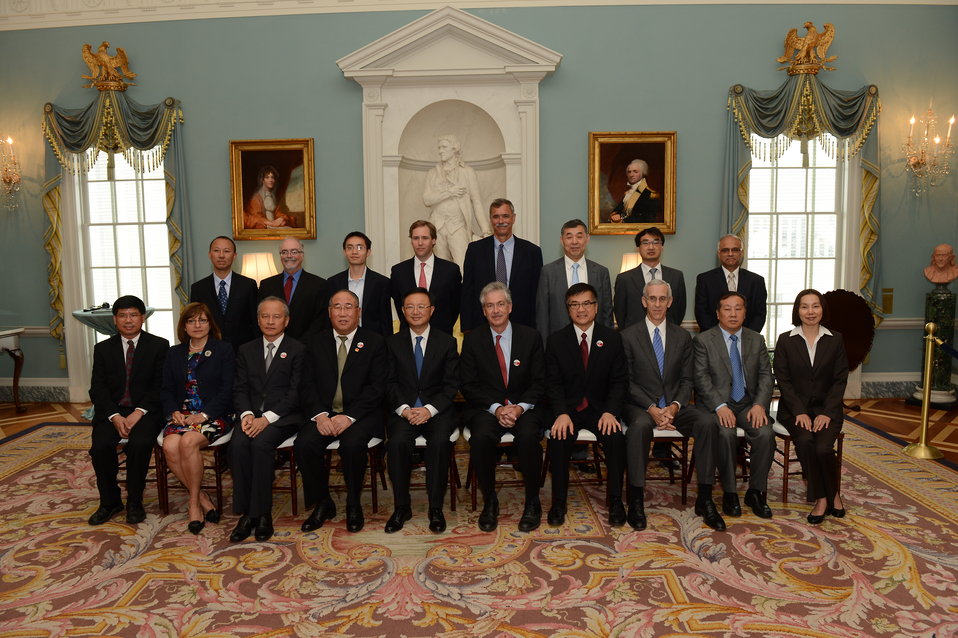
Deputy Secretary Burns and Chinese State Councilor Yang Pose for a Photo With Representatives of the U.S.-China EcoPartnerships

U.S. Deputy Secretary of State William Burns, Chinese State Councilor Yang, U.S. Ambassador to China Gary Locke, Chinese Ambassador to the U.S. Cui Tiankai, Special Envoy for Climate Change Todd Stern, and other U.S. and Chinese officials pose for a photo with representatives of the six new U.S.-China EcoPartnerships: Coca-Cola (Atlanta, GA) with the Yangtze River Delta Circular Economy of Technology (Zhejiang, China); Institute for Sustainable Communities (Montpelier, VT) with the National Center for Climate Change Strategy and International Cooperation (Beijing, China); Natural Resources Defense Council (Washington, DC) with Beijing Energy Conservation and Environment Protection Center (Beijing, China); New York Institute of Technology (New York, NY) with Peking University (Beijing, China); Raven Ridge Resources (Grand Junction, CO) with Guizhou International Cooperation Center for Environmental Protection (Guizhou, China); and Stony Brook University (Stony Brook, NY) with Tongji University (Shanghai, China), at the U.S. Department of State in Washington, D.C., on July 11, 2013.